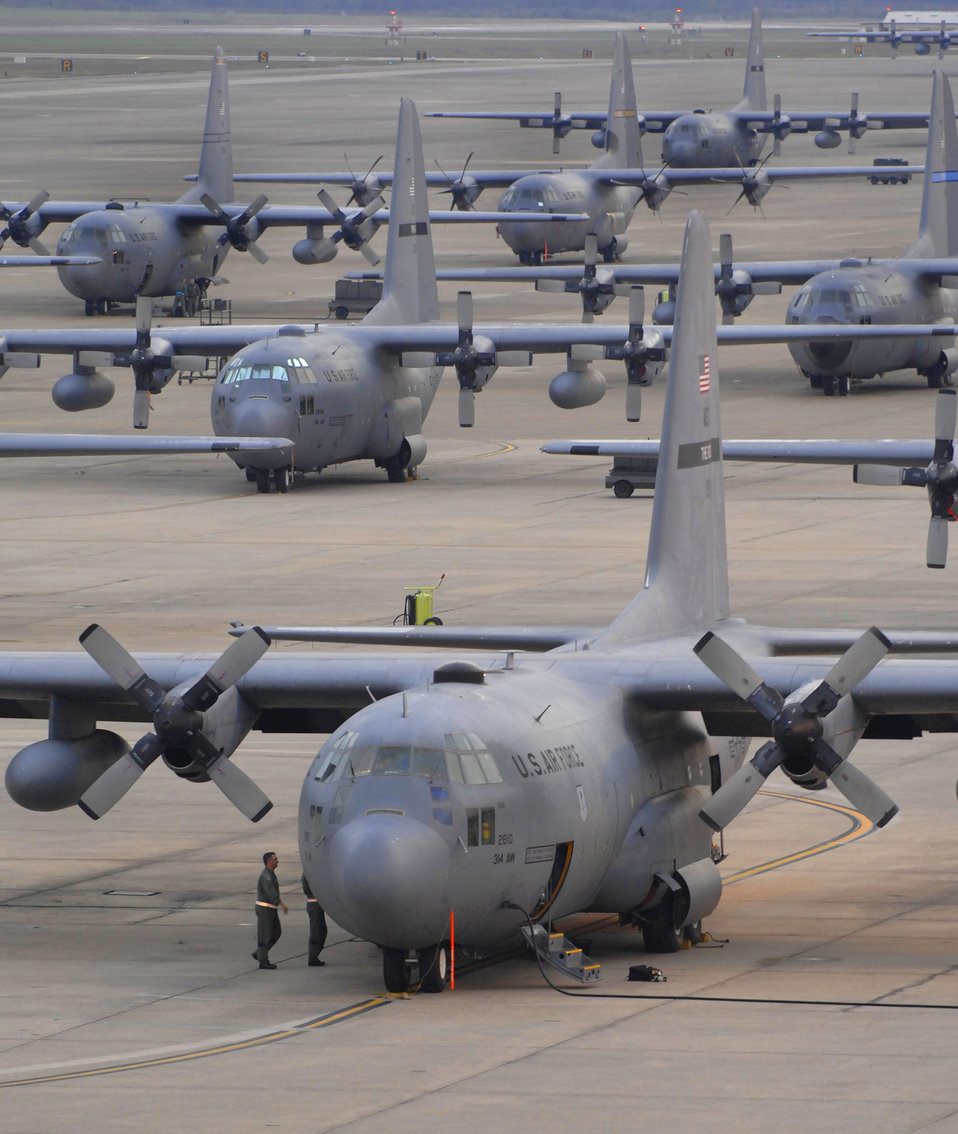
Preparing for takeoff

A crew performs pre-flight checks on a C-103E Hercules moments before a scheduled take off at Little Rock Air Force Base, Ark.